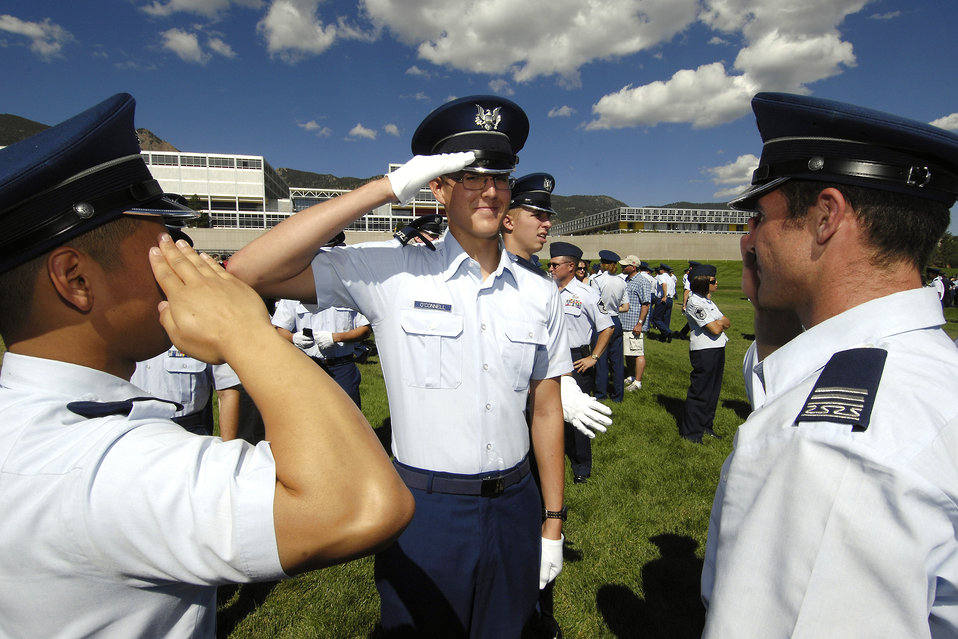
Academy cadets participate in Acceptance Day parade

U.S. Air Force Academy Cadet 4th Class Kody O'Connell returns salutes given by Cadet 2nd Class Alexander Paladino and Cadet 1st Class Jason Griggs Aug 6 after they pinned on his shoulder boards on the Stillman Parade Field near Colorado Springs, Colo.